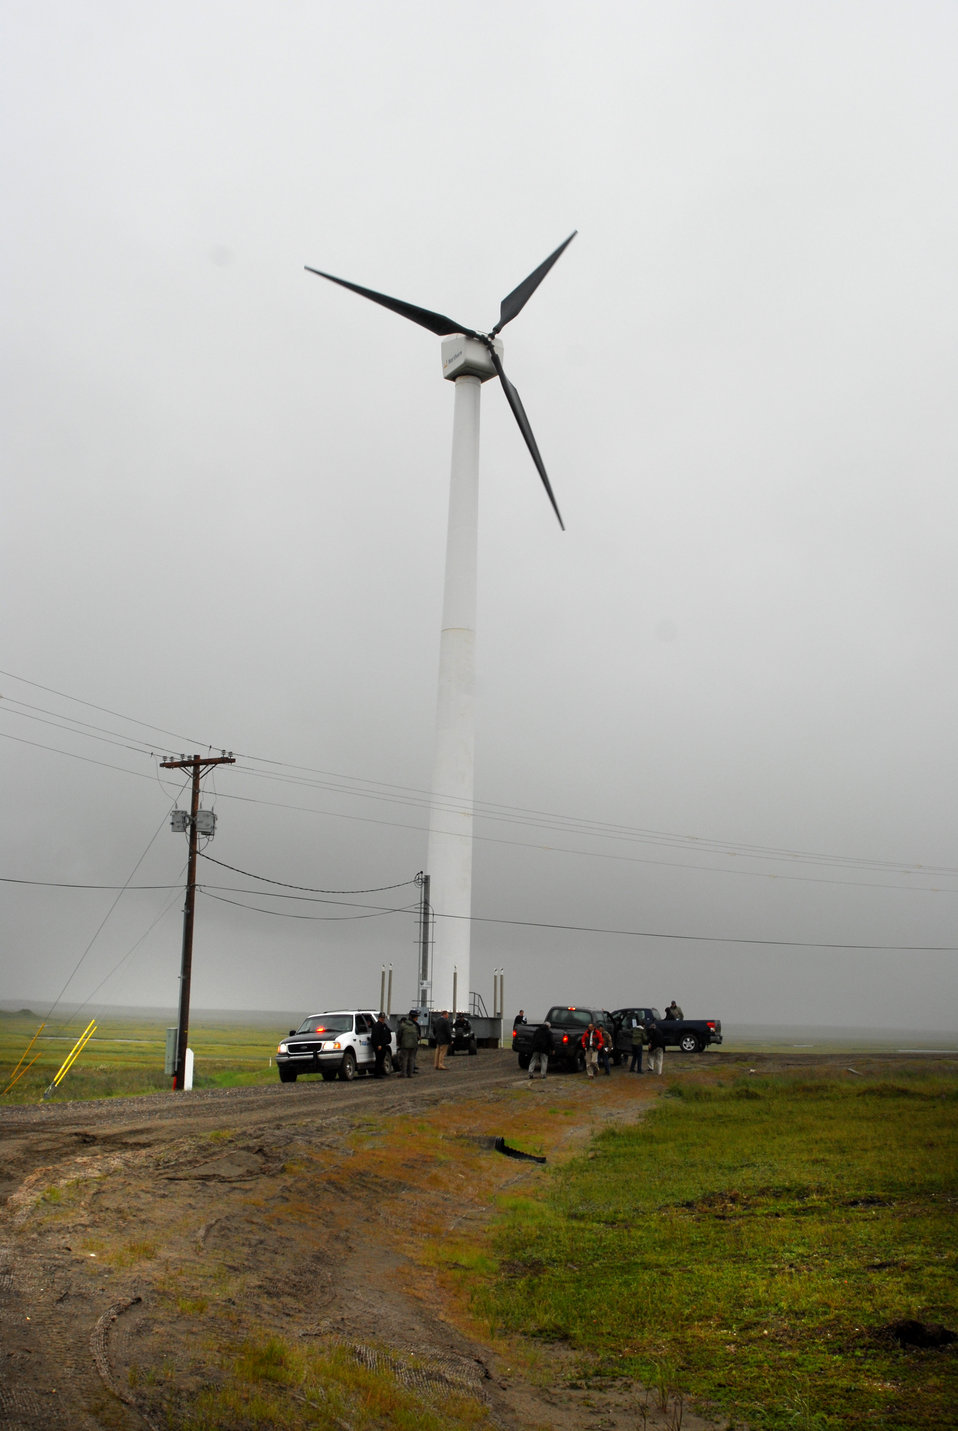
Rural Tour 4136

Rural Tour Alaska Aug. 2009